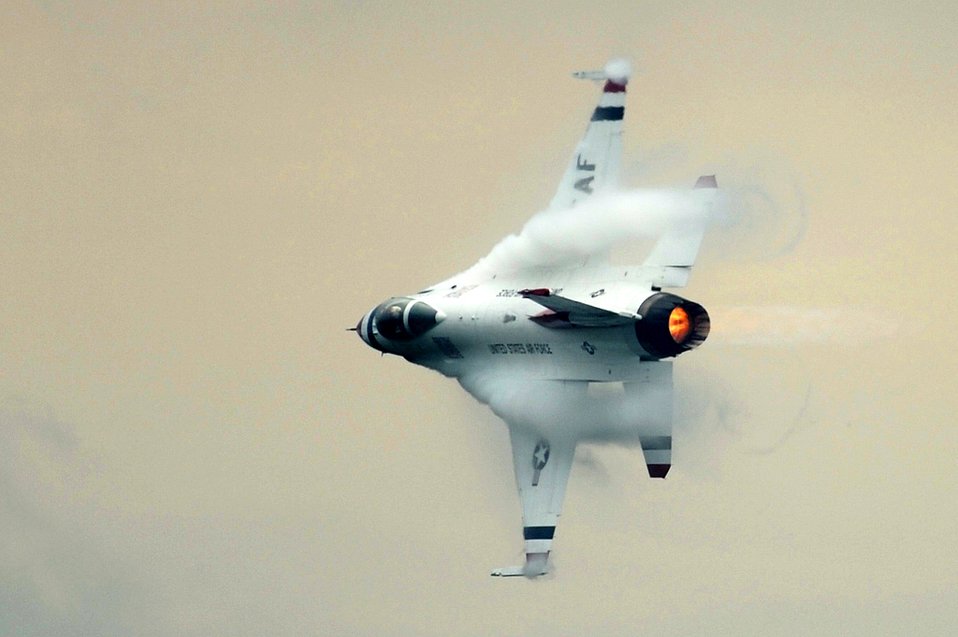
Screaming Falcon

Maj. Aaron Jelinek demonstrates the turning performance of an F-16 Fighting Falcon Aug. 14, 2011, at Pease Air National Guard Base, N.H., during the Boston-Portsmouth Air Show. Jelinek is the U.S. Air Force Thunderbird's lead solo pilot.